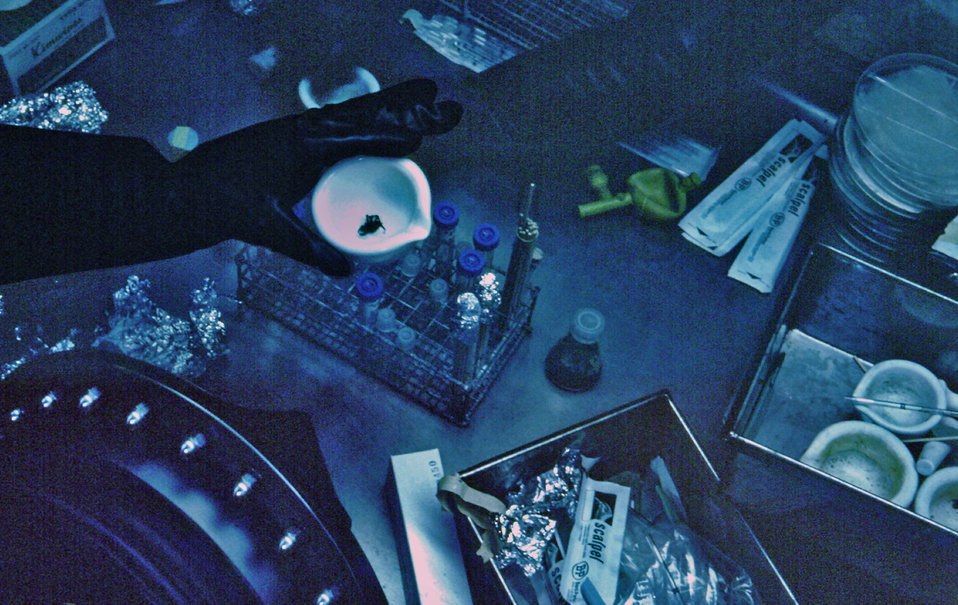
This 1975 photograph showed a CDC laboratory technician working through the gloved portals of a protective 'glove box', and at the time was conducting an investigation in order to determine if a spider, here located in the crucible, had any trace of the Marburg virus.